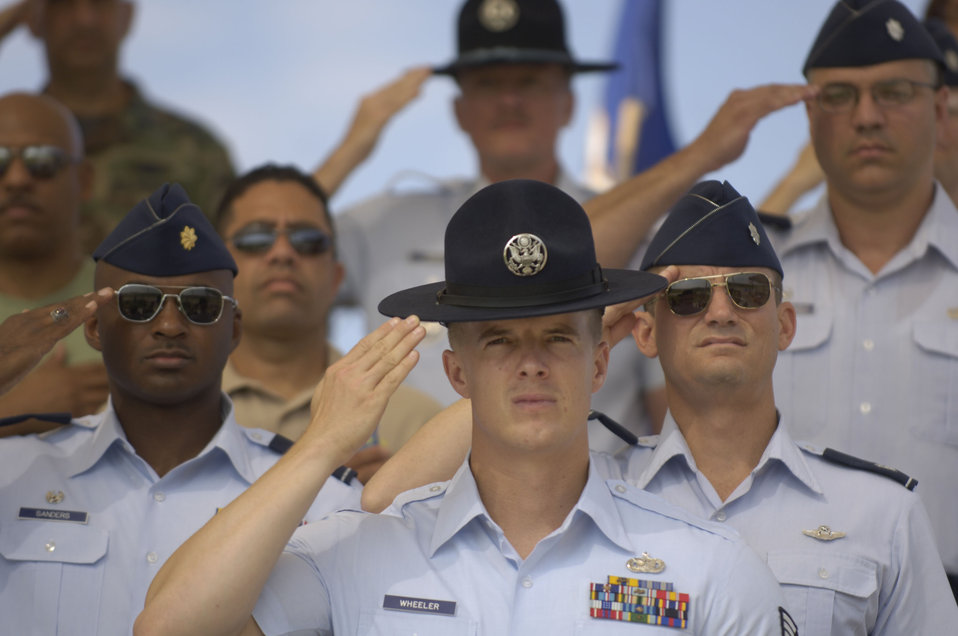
Lackland honors nine enlisted heroes

Airmen render a salute during the National Anthem at the Basic Military Training Memorialization Ceremony on Lackland Air Force Base, Texas, on Wednesday, June 14. The ceremony included the dedication of nine training facilities in honor of nine enlisted heroes who have served from World War II to present-day operations in the war on terrorism.